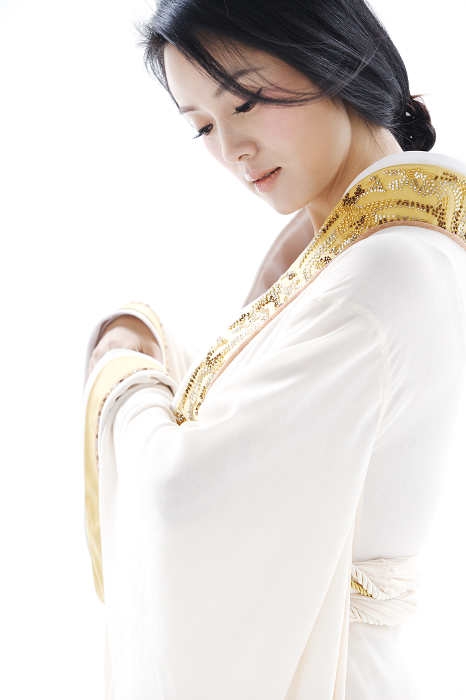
Ha Hui, singer, songwriter, calligrapher and designer.
中文: 哈辉，古典音乐演唱家，陕西汉中人。中央民族大学副教授。